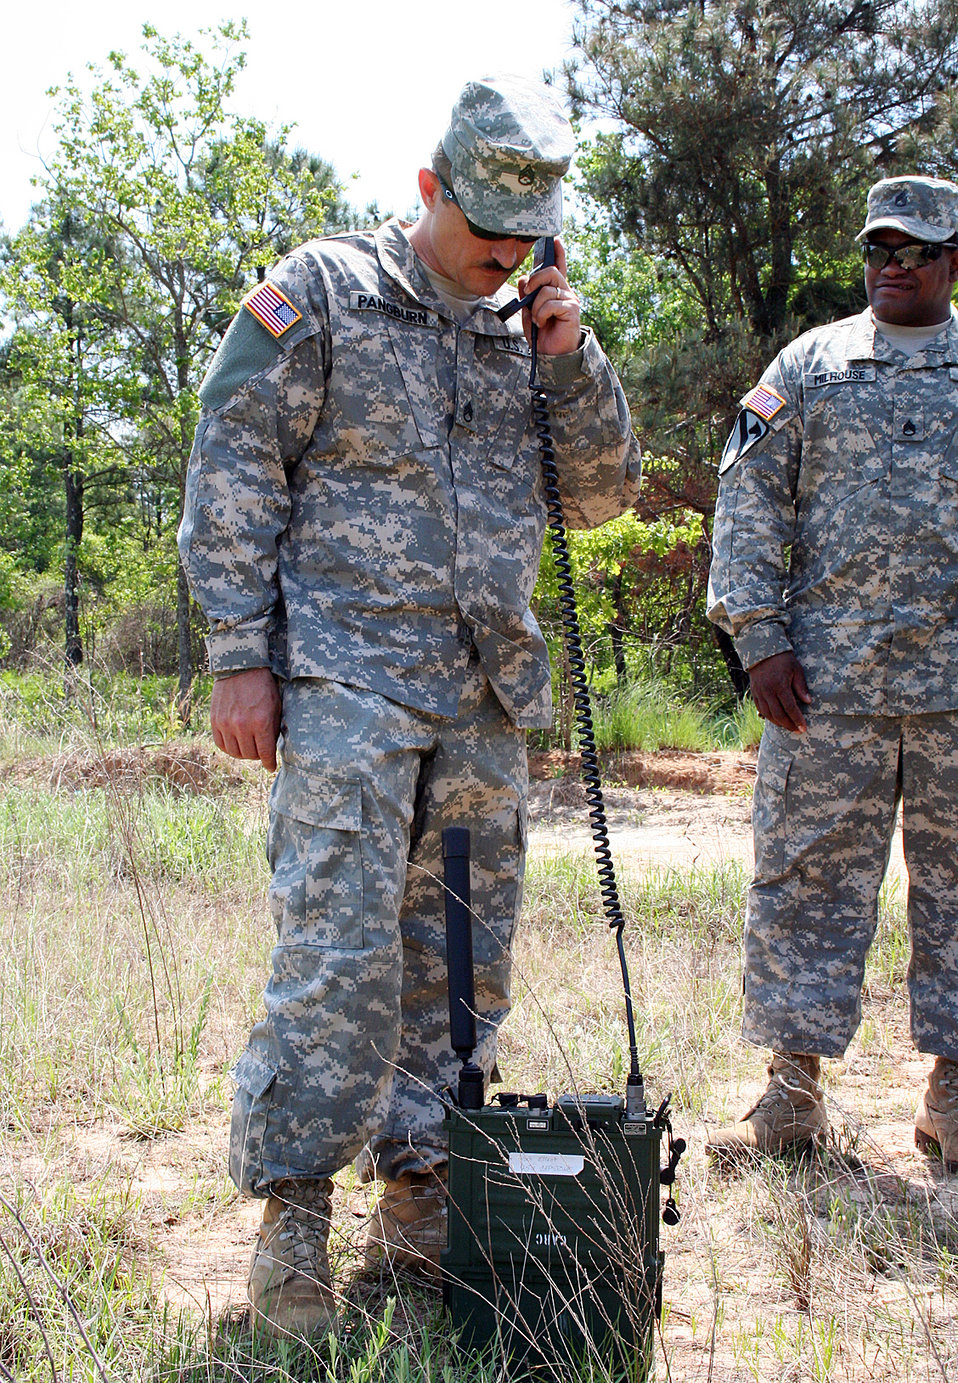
Army, Air Force open communications

Army Staff Sgt. Robert Pangburn of the 551st Signal Battalion attempts to communicate using a Harris radio with a C-130 Hercules crew from the 700th Airlift Squadron out of Dobbins Air Reserve Base, Ga. The joint training is the first of its kind at Fort Gordon, Ga., and will be added to the final capstone event of Army communications technical training at Fort Gordon.